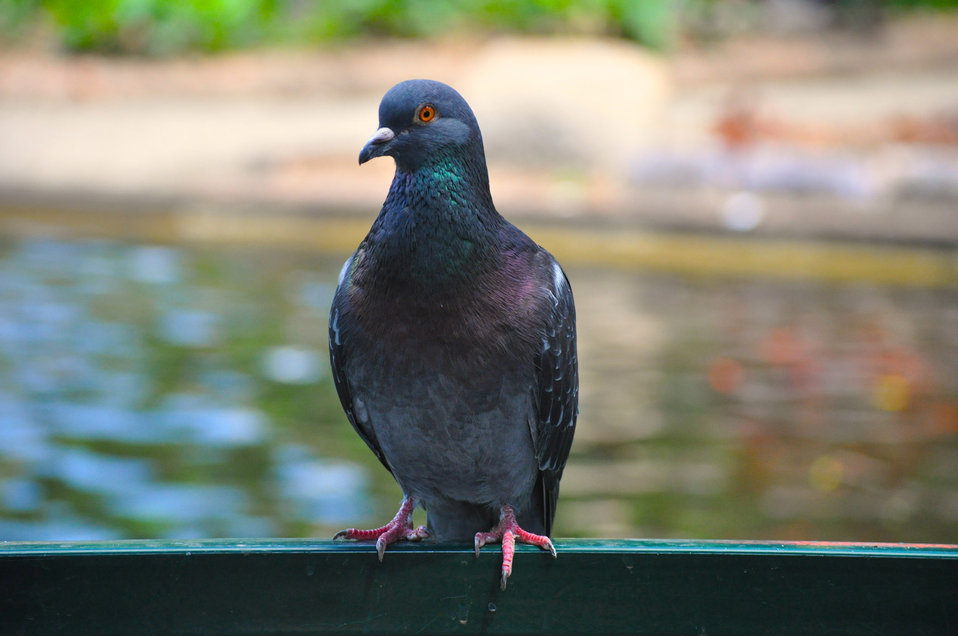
Pigeon in park.